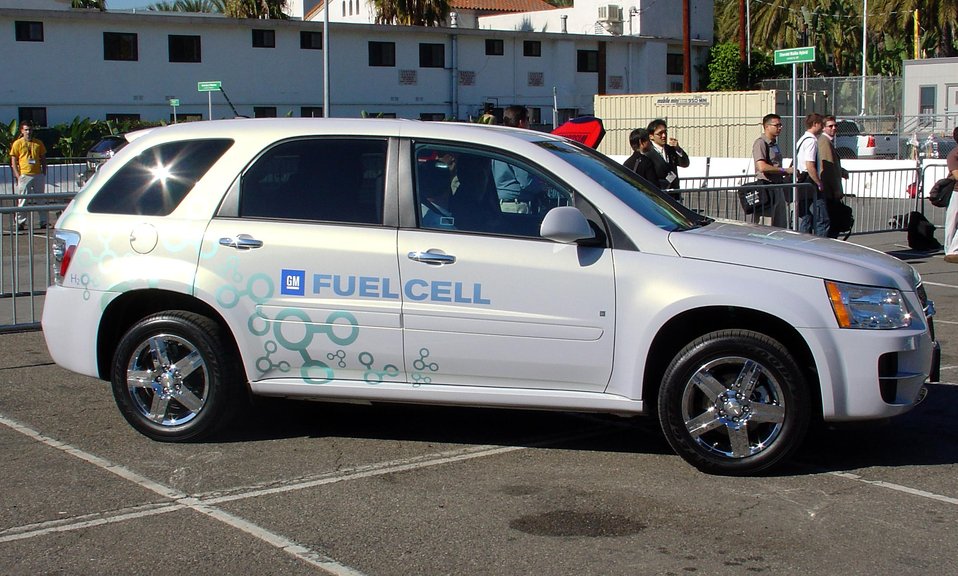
Chevy Equinox FCV (fuel cell vehicle) 2008 at the EVS23 Conference in Anaheim, California.

Fuel cells combined hydrogen fuel with oxygen from the air to create electricity, which powers vehicles by means of electric motors. Because there is not combustion in the process, there are no other emissions, making fuel cells an extremely clean and renewable source of electricity.